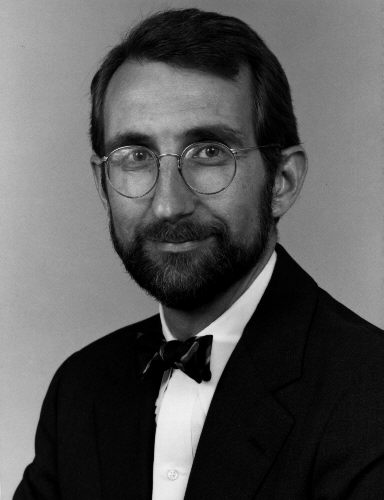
William L. Roper, M.D., M.P.H., Director, CDC